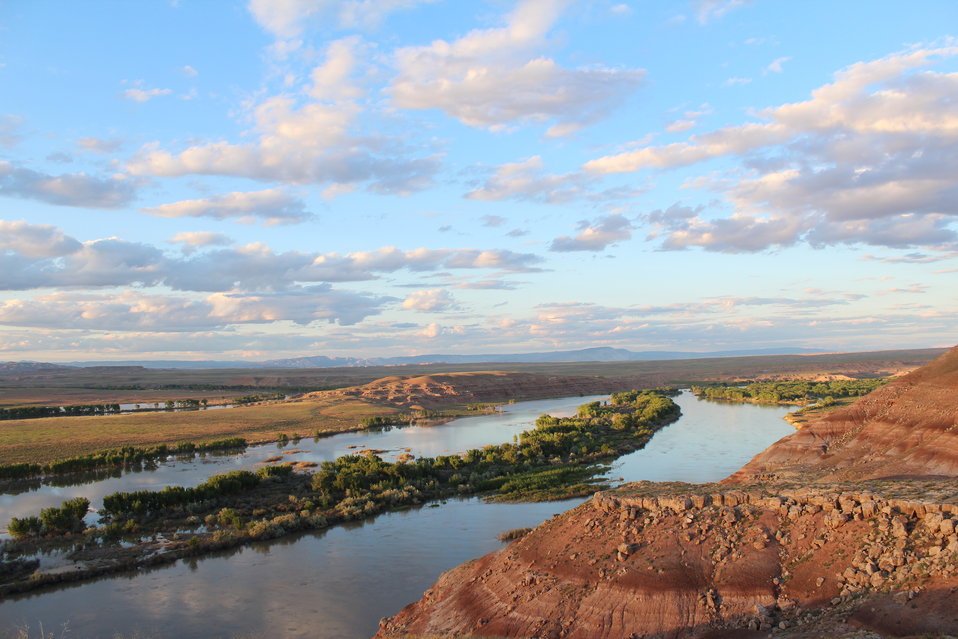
The Green River at Ouray NWR

Sunset overlooking The Green River.

Location: Ouray NWR

Credit: Jaclyn Kircher / USFWS

Photo Contest Entry #34